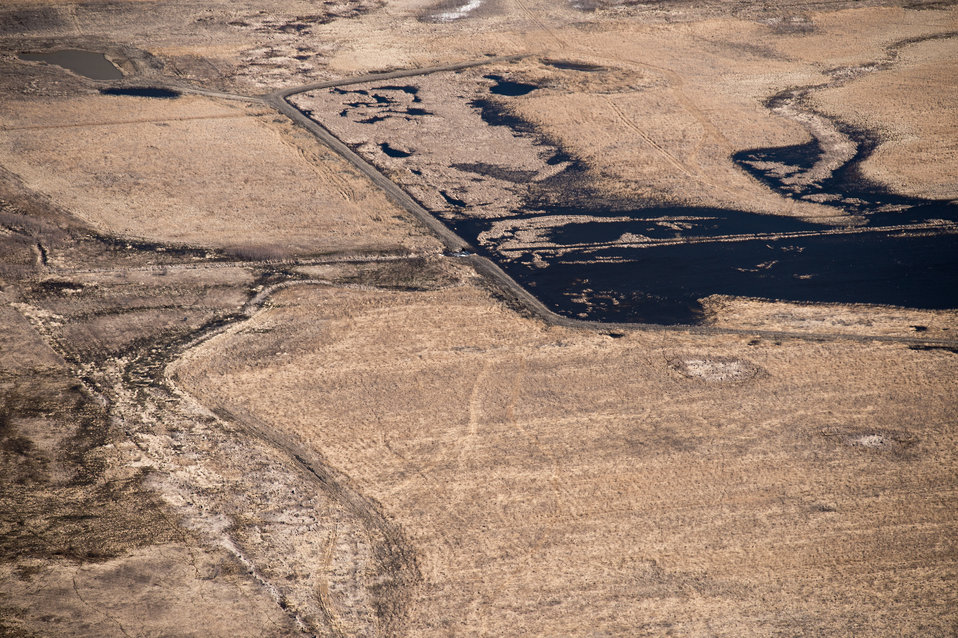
Ehlert North U.S. Department of Agriculture (USDA) Natural Resources Conservation Service (NRCS) Wetland Reserve Program (WRP) in Wilkin County, MN, on Tuesday, April 30, 2013. For information about this and other programs from the USDA Red River Basin Initiative (RRBI) please see www.mn.nrcs.usda.gov/news/features13/RRBI.html.